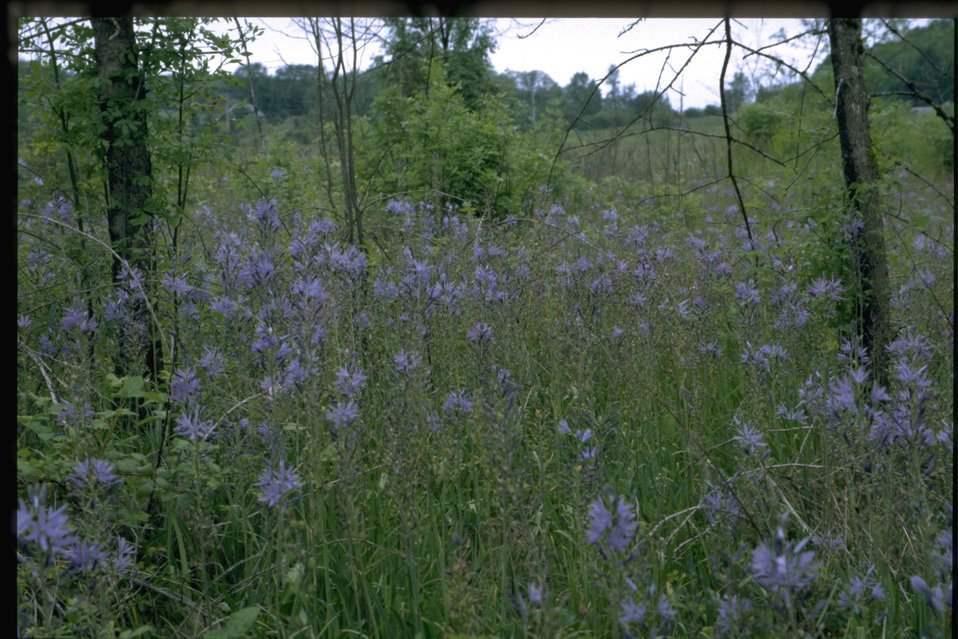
Farshot of Camassia quamash.